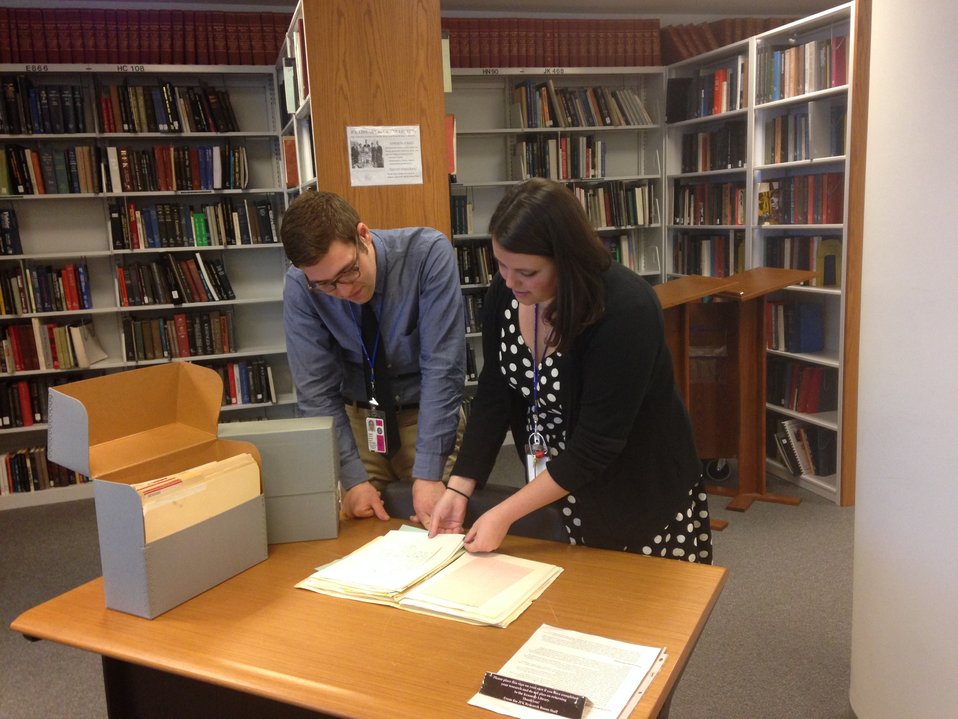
Research room interns Corbin Apkin and Rachael Guadagni learn to find original letters to President Kennedy in the White House Central Name File at the JFK Library.; Location: John F. Kennedy Presidential Library, Boston, MA